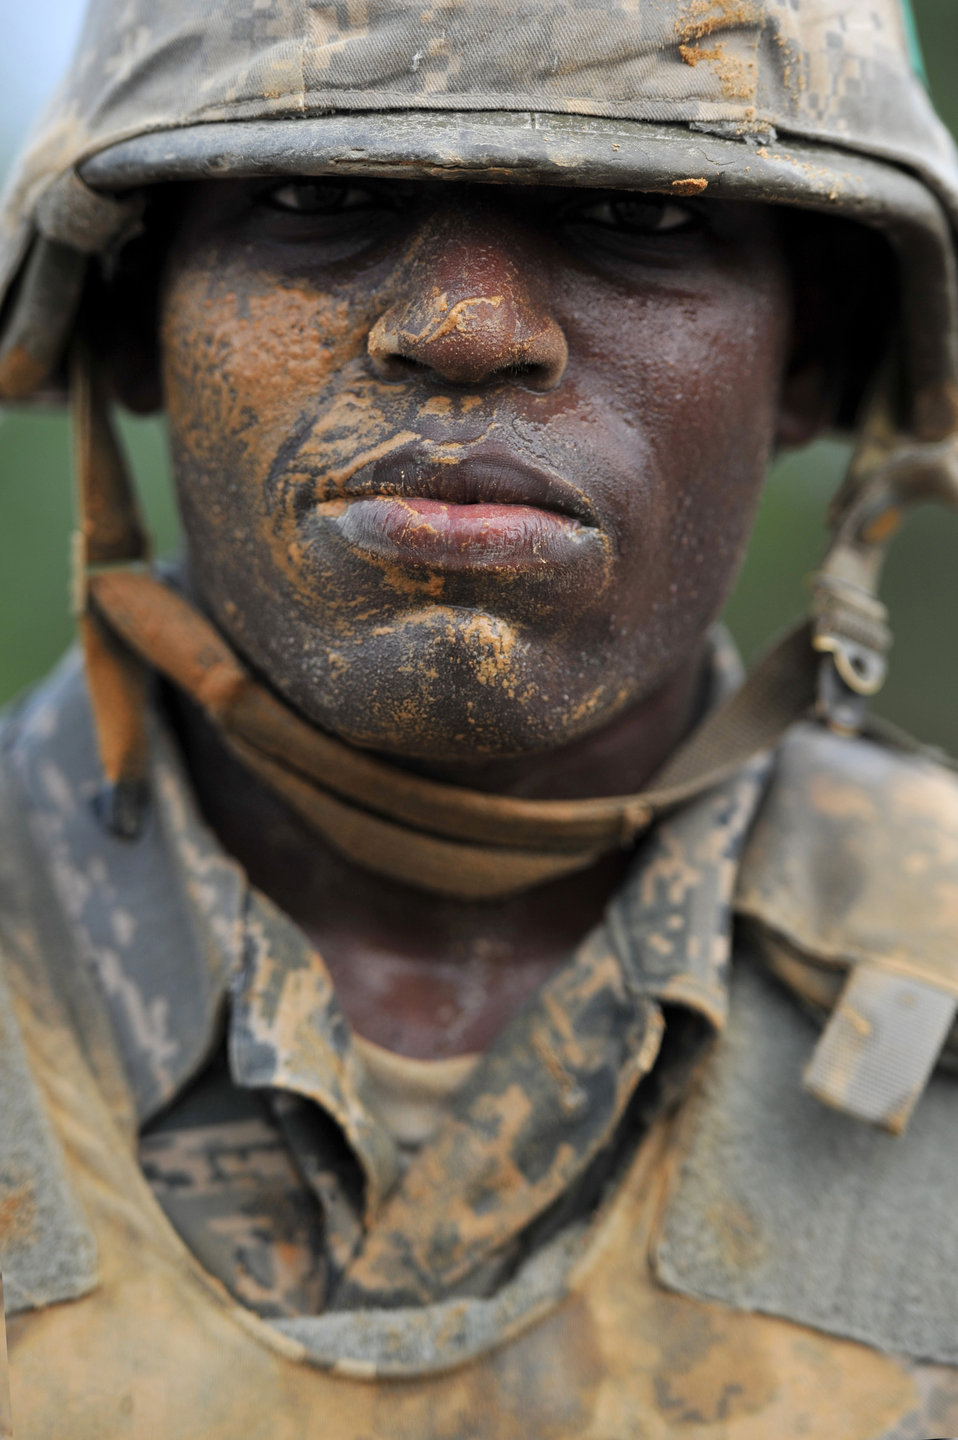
BEAST

Basic trainees go through their sixth week of Air Force basic military training at the Basic Expeditionary Airman Skills Training on May 25, 2011, at Lackland Air Force Base, Texas.